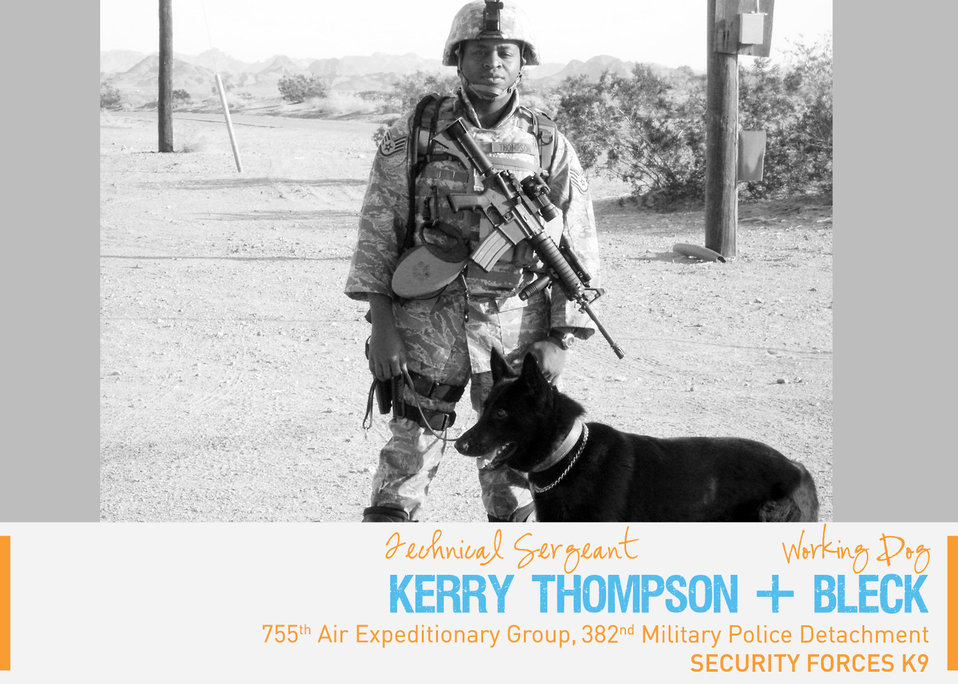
Portraits in Courage Vol 4: Tech. Sgt. Kerry Thompson and